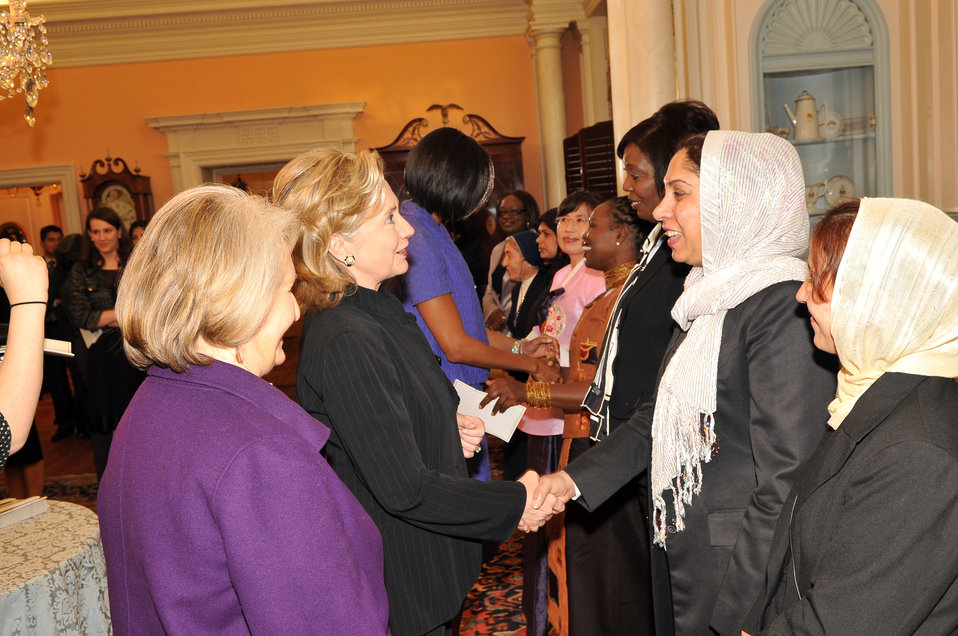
Secretary Clinton Shakes Hands With Honoree Colonel Shafiqa Quraishi of Afghanistan

U.S. Secretary of State Hillary Rodham Clinton shakes hands with Honoree Colonel Shafiqa Quraishi of Afghanistan at the 2010 International Women of Courage at the U.S. Department of State, Washington, D.C. March 10, 2010.